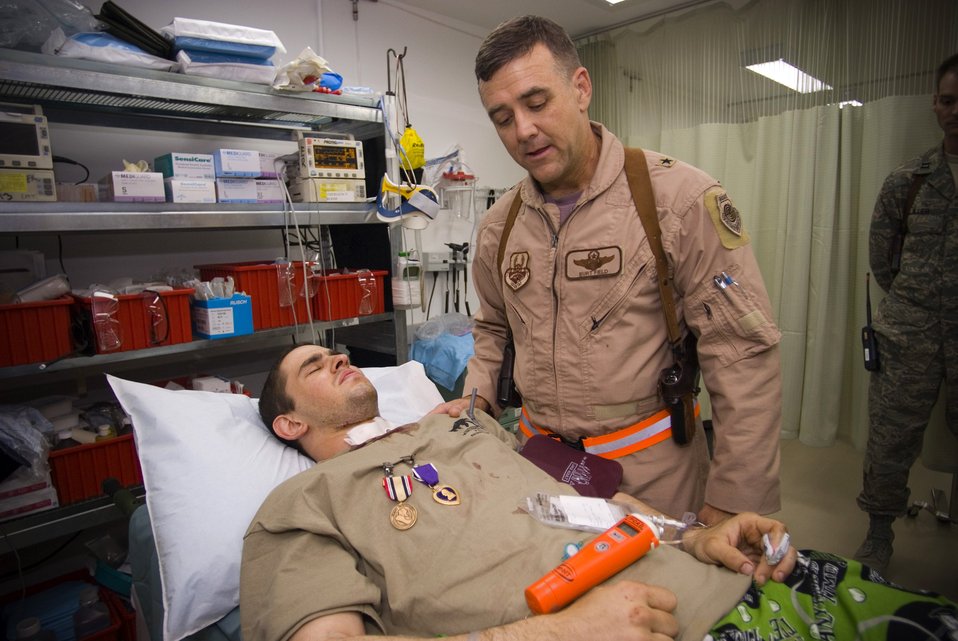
Airman survives 'million-dollar' wound

Airman 1st Class Michael Brady receives the Iraq Campaign Medal and the Purple Heart from Brig. Gen. Burton M. Field, commander of the 332nd Air Expeditionary Wing, at the Air Force Theater Hospital at Balad Air Base, Iraq, Oct. 14. Airman Brady earned the medals while augmenting the Army in a non-traditional